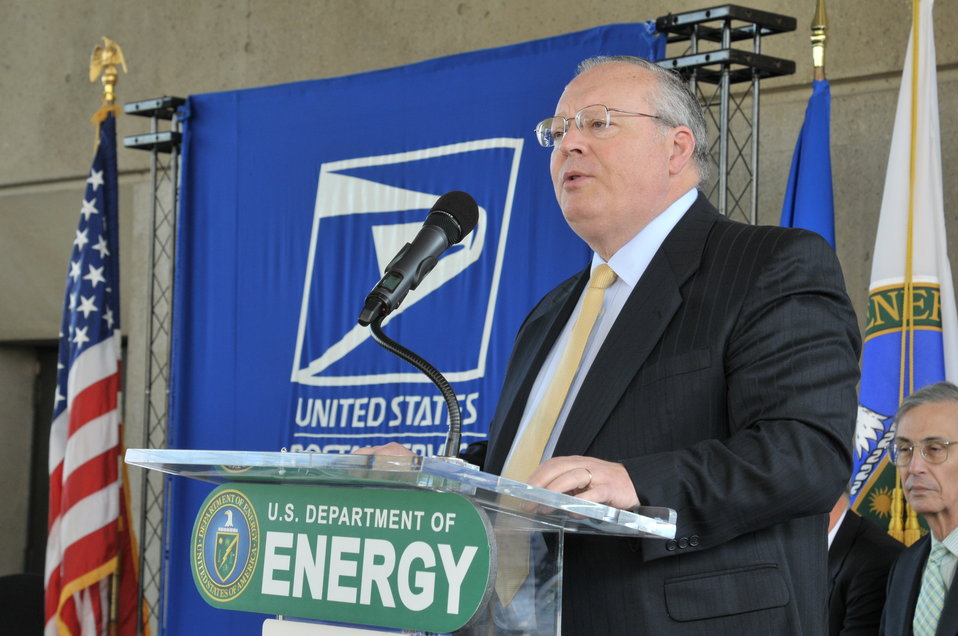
U.S Postal Services introduces a new Global: Sea Surface temperatures forever stamp at the Earth Day program at Department of Energy on April 22, 2014. ( DOE Deputy D.Poneman,T.Day, C.Williams, C.Anderson II, J.Colin Ph.D, Dr. K. Sullivan, K.Tobin Ph.D, W. Gicher Jr)